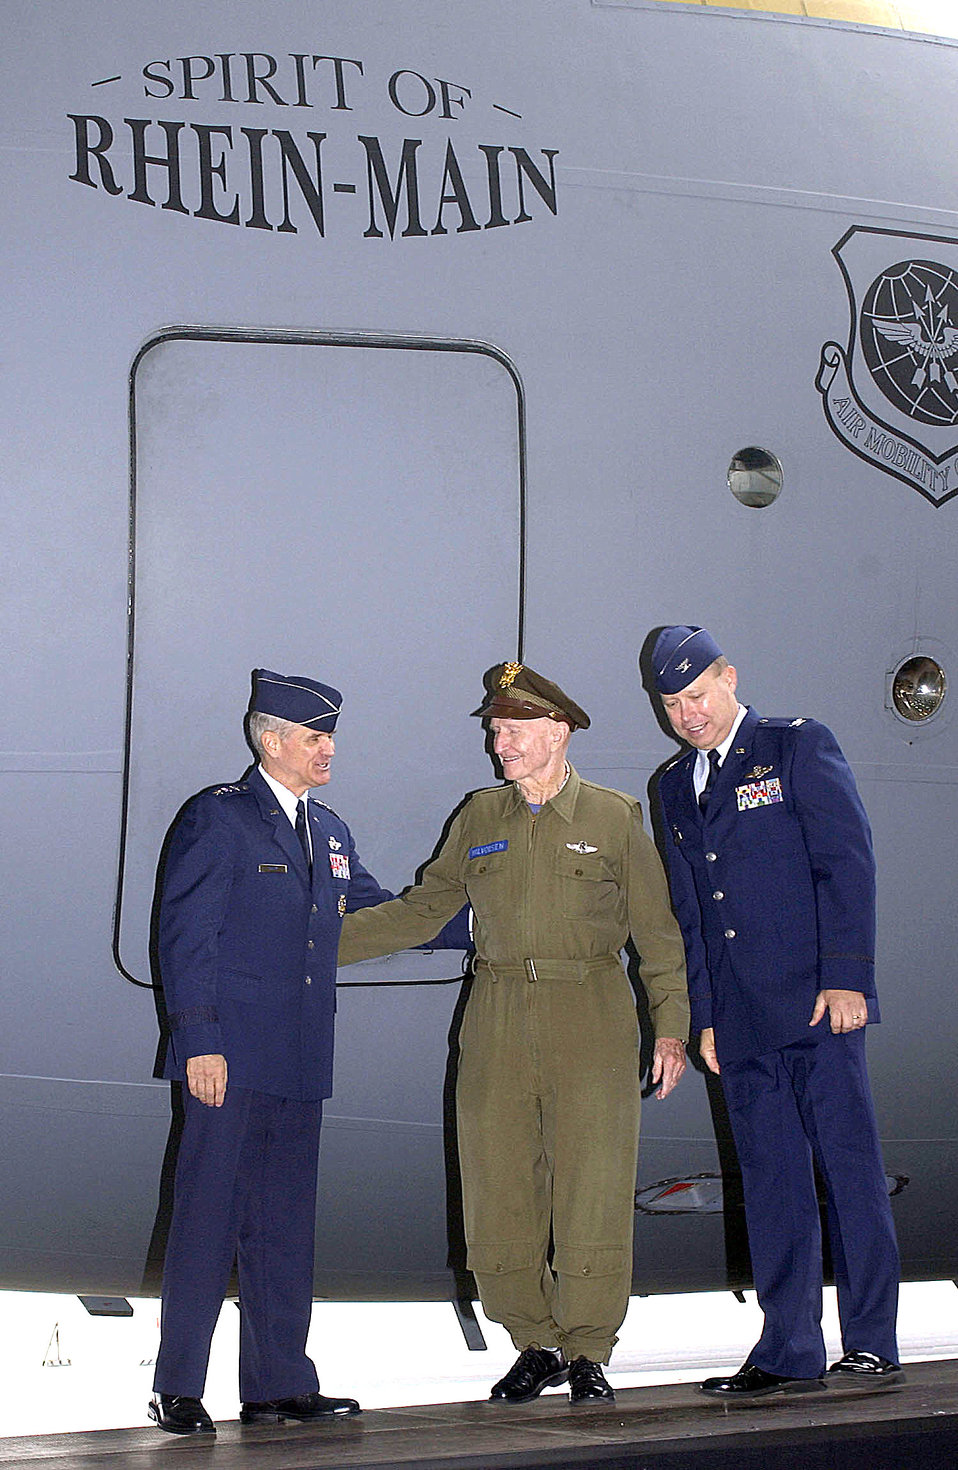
'Gateway to Europe' ends 60-year airlift legacy

RHEIN-MAIN AIR BASE, Germany - (From left) Lt. Gen. Christopher A. Kelley, Air Mobility Command vice commander; retired Lt. Col. Gail Halvorsen; and Col. Bradley Denison, 469th Air Base Group commander, unveil the newly named C-17 Globemaster III